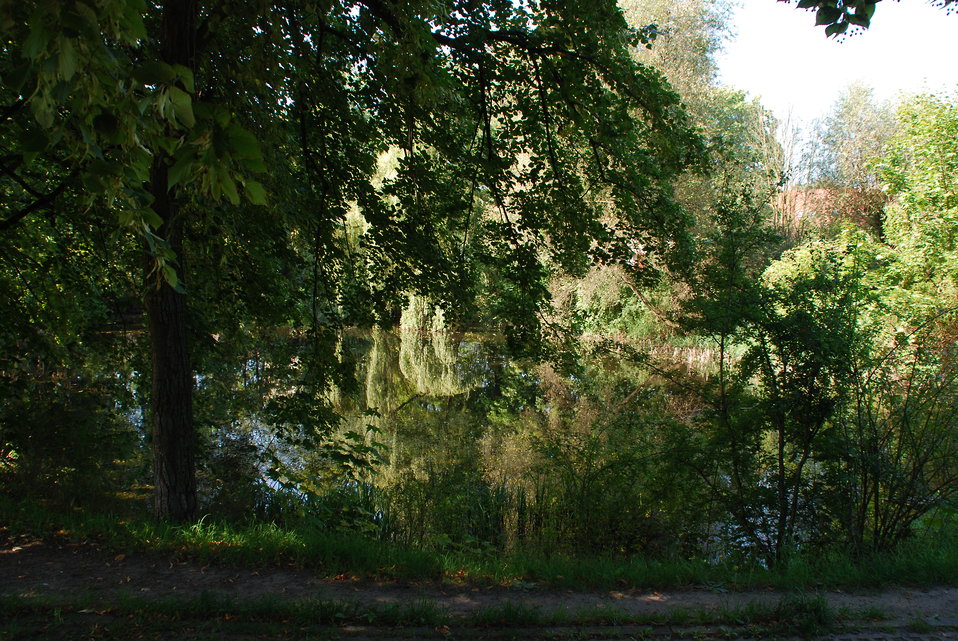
Theaterteich in Frankfurt (Oder), am ehemaligen Kleist-Theater, Friedrich-Ebert-Straße